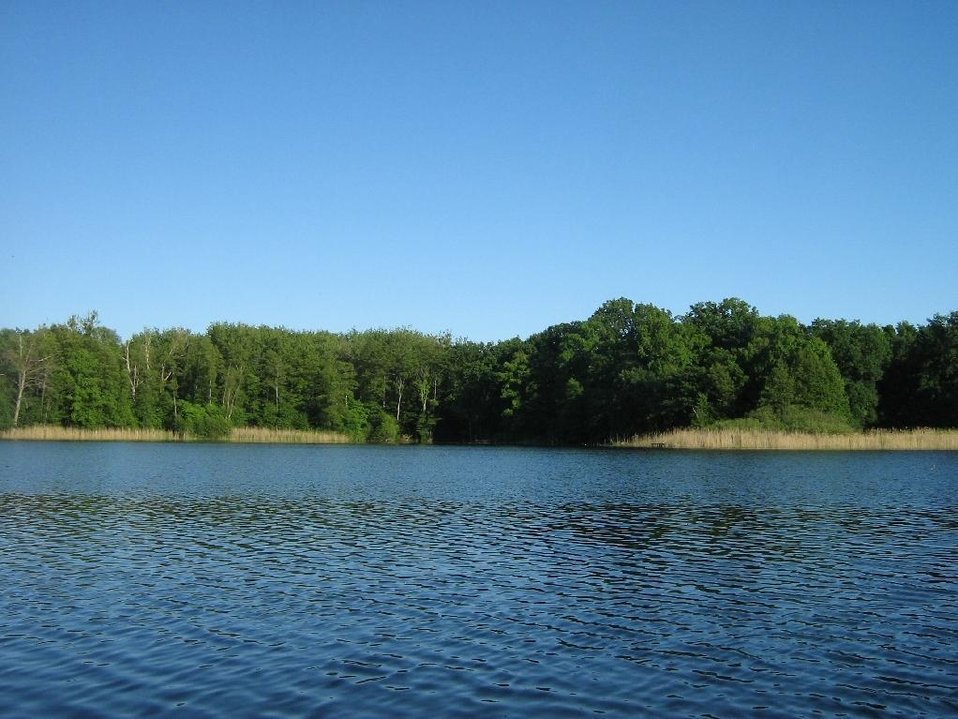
Deutsch: der Sacrower See im Königswald bei Potsdam (Brandenburg).